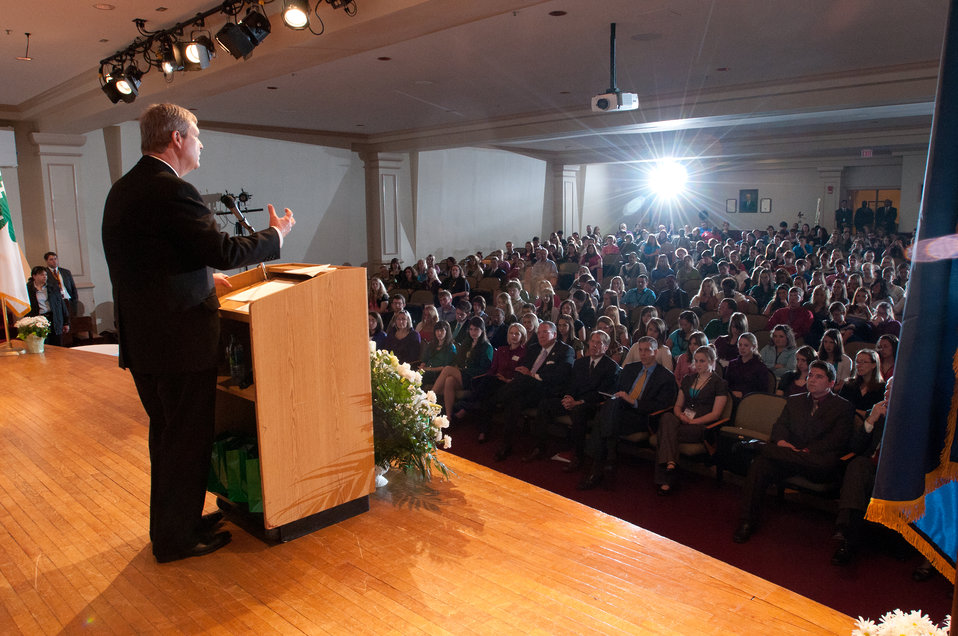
U.S. Department of Agriculture (USDA) Secretary Tom Vilsack (at podium) and Department of Education Secretary Arne Duncan spoke with approximately 300 youths from 47 states or territories and Canada at the National 4-H Conference on Tuesday, April 5, 2011 in Washington, DC The conference is the premier youth development opportunity of the USDA. Aged between 15-19 years old the attendees were selected by various means by their states to be delegates to the conference. The Secretaries then took questions from the audience. Secretary Vilsack received questions on topics such as land grants, what is an average day for him, and both talked of their goals to have 1,000 new farmers and 1,000 new educators.